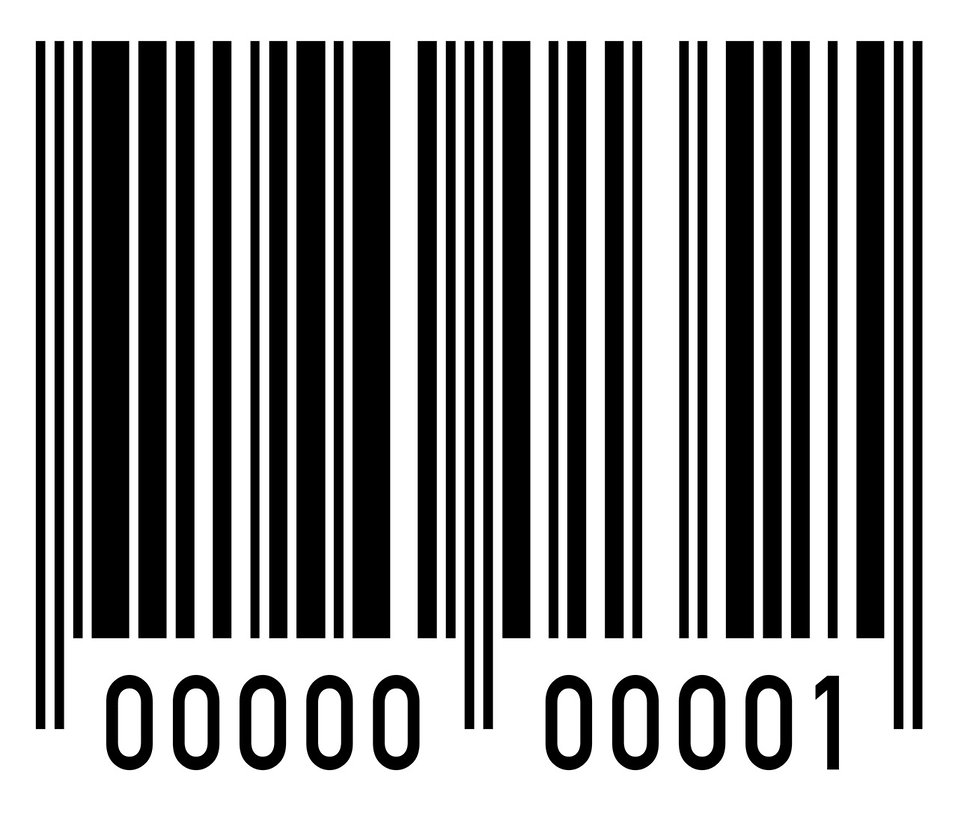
Barcode

Black barcode starting from one.